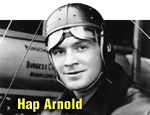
Gen. Henry H. (Hap) Arnold

Early Years -- Gen. Henry H. (Hap) Arnold